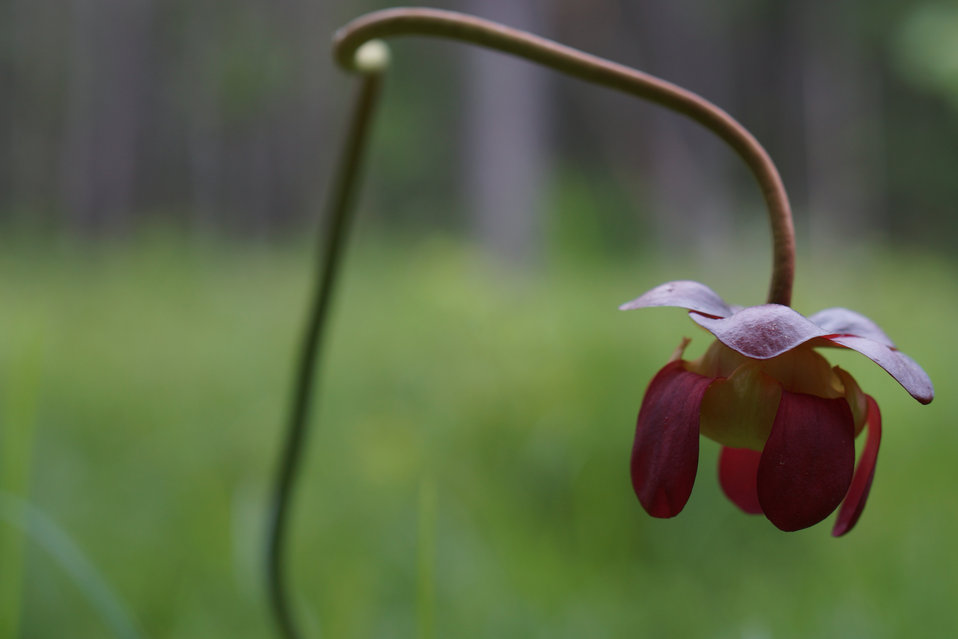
Drooping mountain purple pitcher plant

In May, bog conservationists from Tennessee, North Carolina, and Georgia convened in the north Georgia mountains for the spring, 2014 meeting of the Bog Learning Network. The event provided an opportunity for biologists to see, first hand, the result of management efforts at two north Georgia bogs. More importantly, the outings provided an opportunity to share innovative approaches to bog management, such as the role of the Georgia Plant Conservation Alliance in conserving rare plants and coordinating a cadre of volunteers to work on bog management.

The Bog Learning Network was convened in the winter of 2013 as a way to bring together people working for bog conservation across the Southern Appalachians. Southern Appalachian bogs are one of North America’s rarest habitats and home to many rare plants and animals.